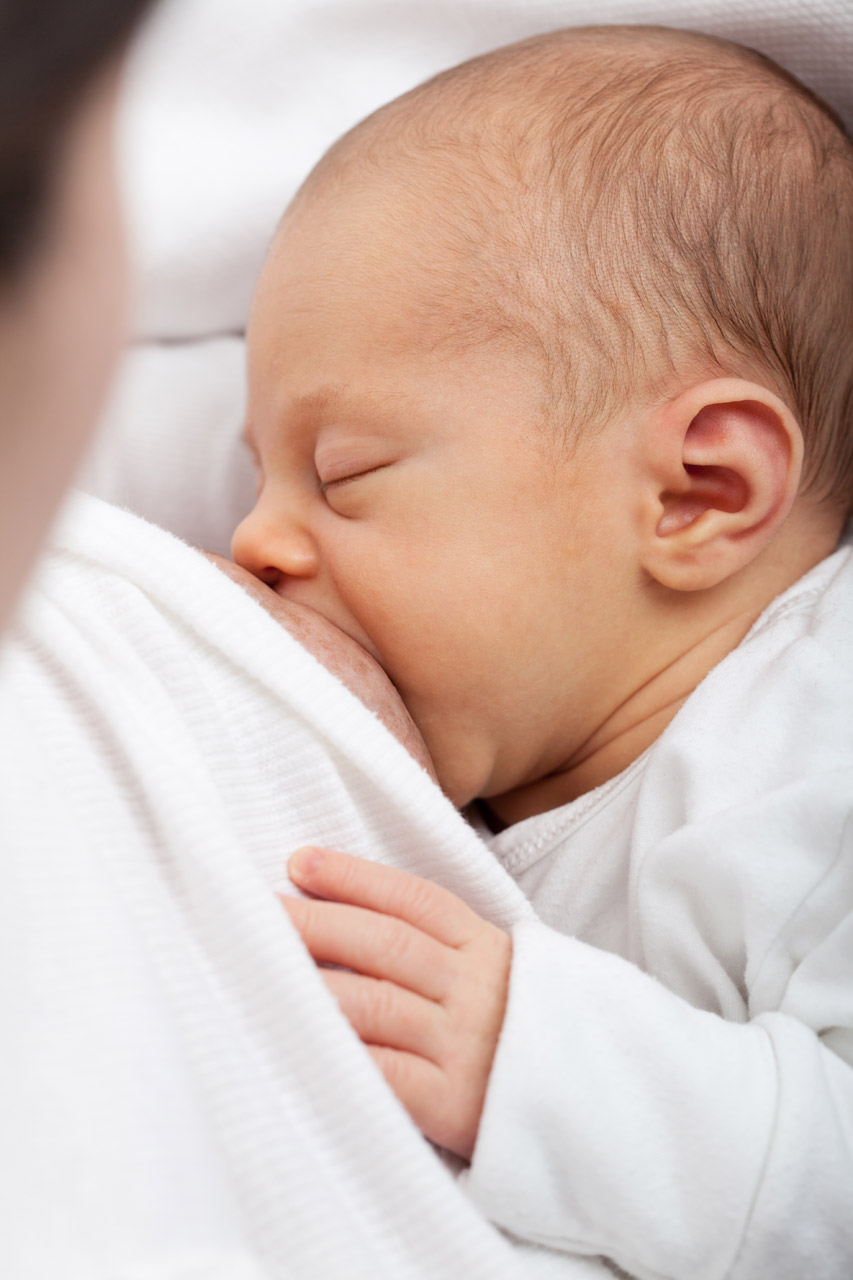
Breastfeeding

Little baby breastfeeding.